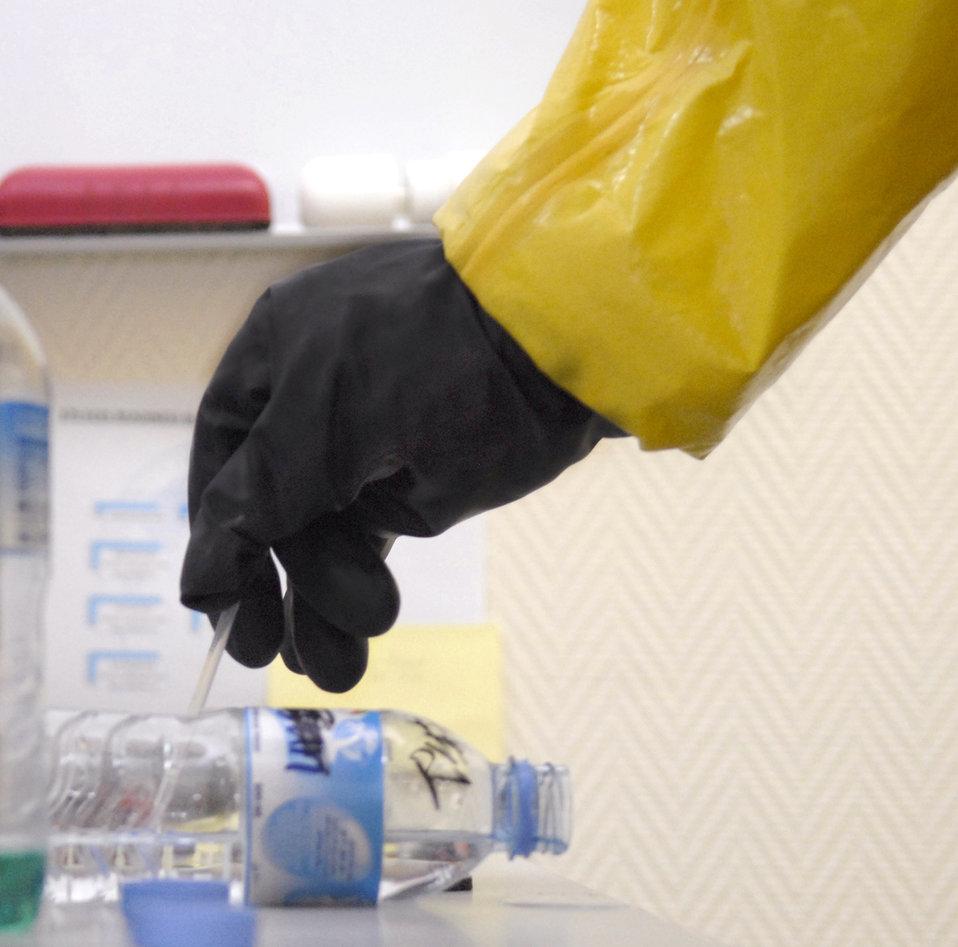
Who you gonna call?

Staff Sgt. Trevor Fettig collects a liquid sample to analyze for contamination during a unit exercise March 27 at an air base in Southwest Asia. Sergeant Fettig, a readiness and emergency management journeymen with the 379th Expeditionary Civil Engineer Squadron, hails from Lompoc, Calif., and is deployed from Travis Air Force Base, Calif.